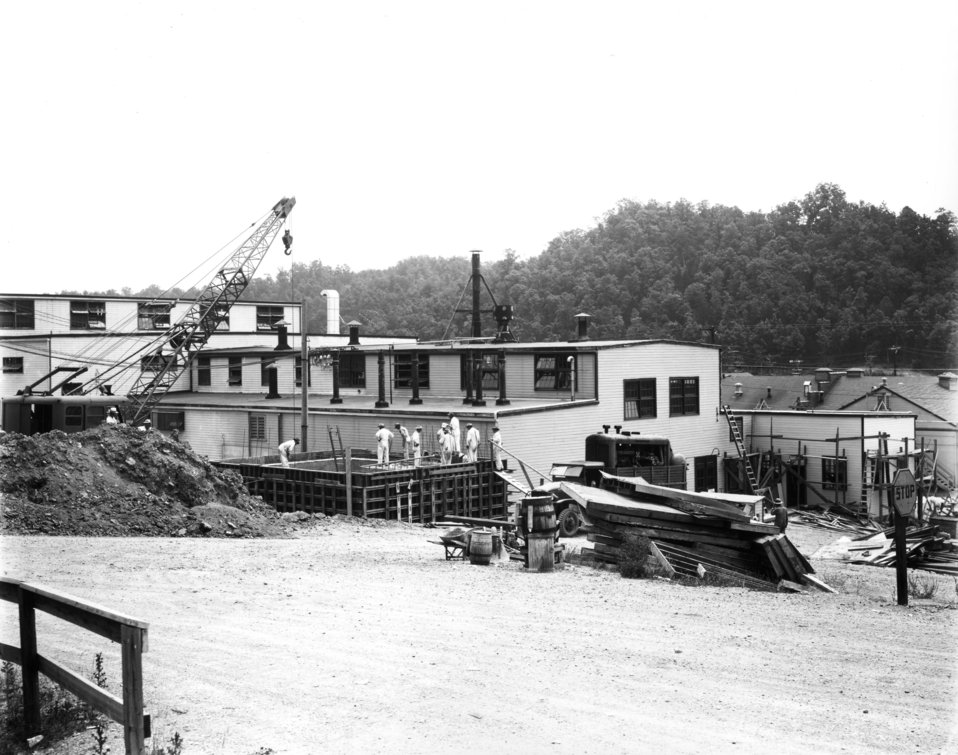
X-10 at Oak Ridge